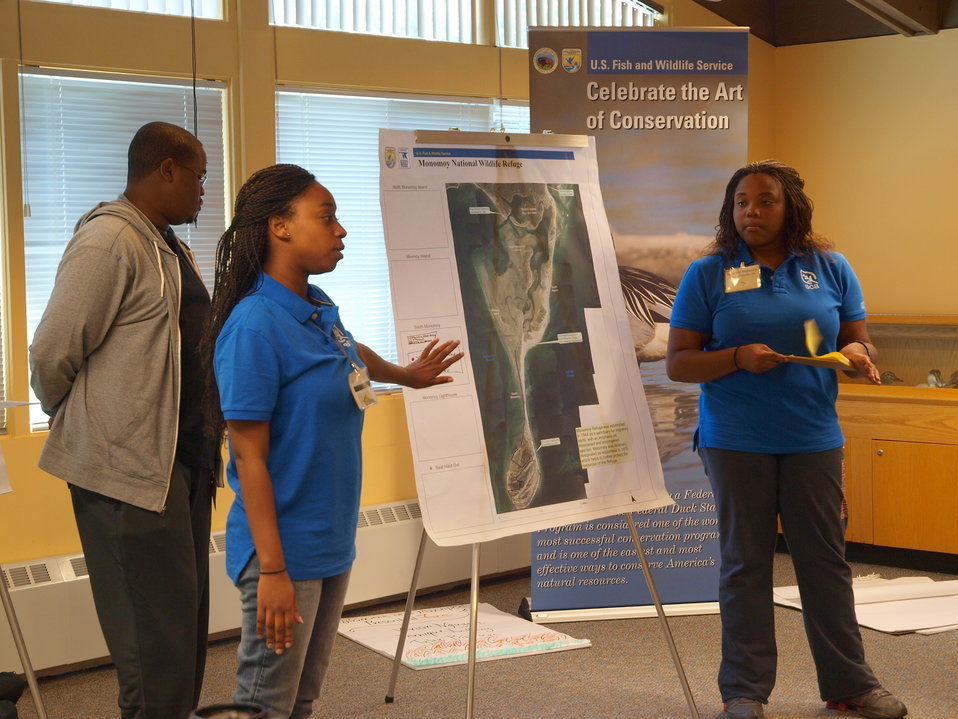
Challenge Project Presentations

CDIP interns explain their solution to a refuge problem at Monomoy National Refuge for their Challenge project.